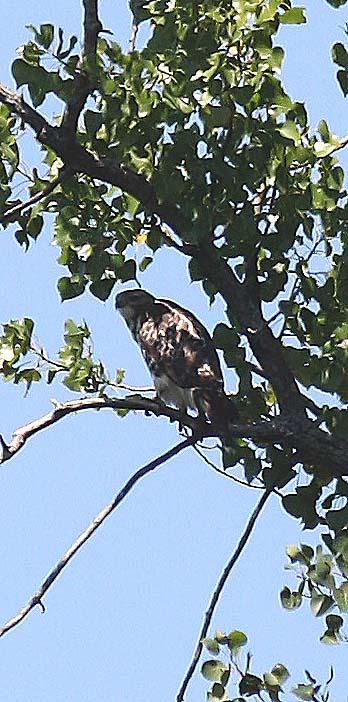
Hawk

Great Meadows National Wildlife Refuge, MA.